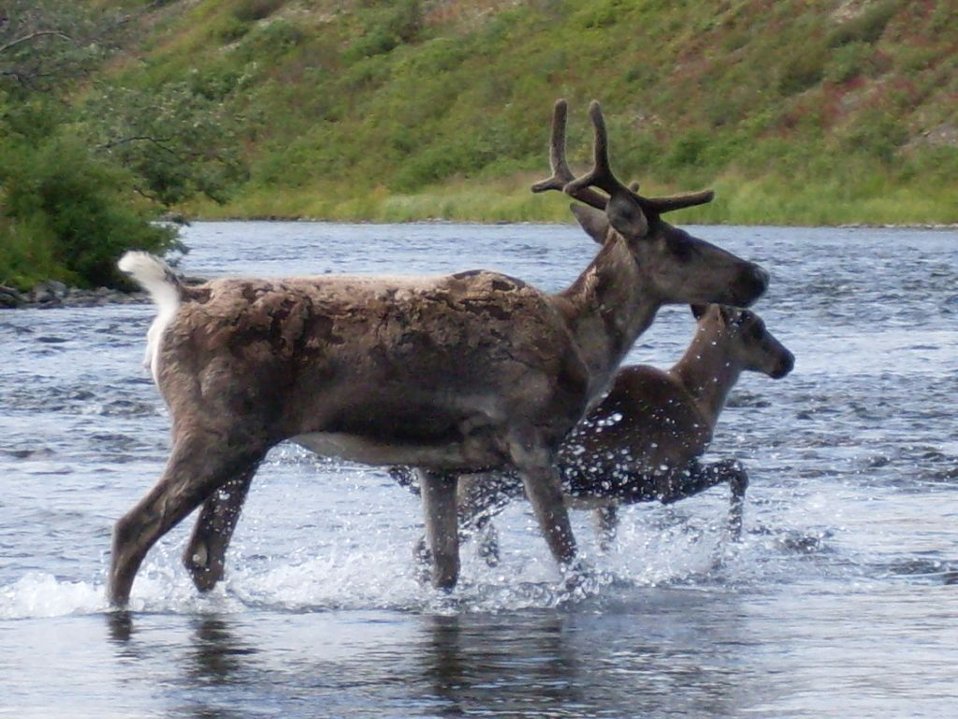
Togiak Refuge

Caribou crossing Kanektok River, Togiak National Wildlife Refuge, AK.